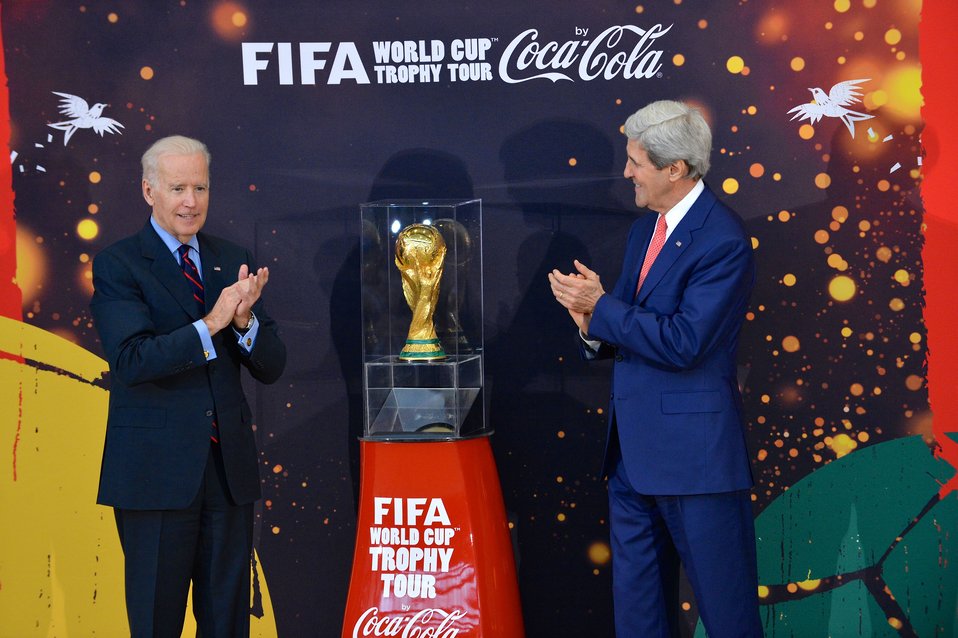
Vice President Biden and Secretary Kerry Unveil the FIFA World Cup Trophy

Vice President Joe Biden and U.S. Secretary of State John Kerry unveil the FIFA World Cup trophy during the FIFA World Cup Trophy Tour by Coca-Cola preceding the FIFA World Cup tournament in Brazil, which begins on June 12, 2014, at the U.S. Department of State in Washington, D.C., on April 14, 2014.